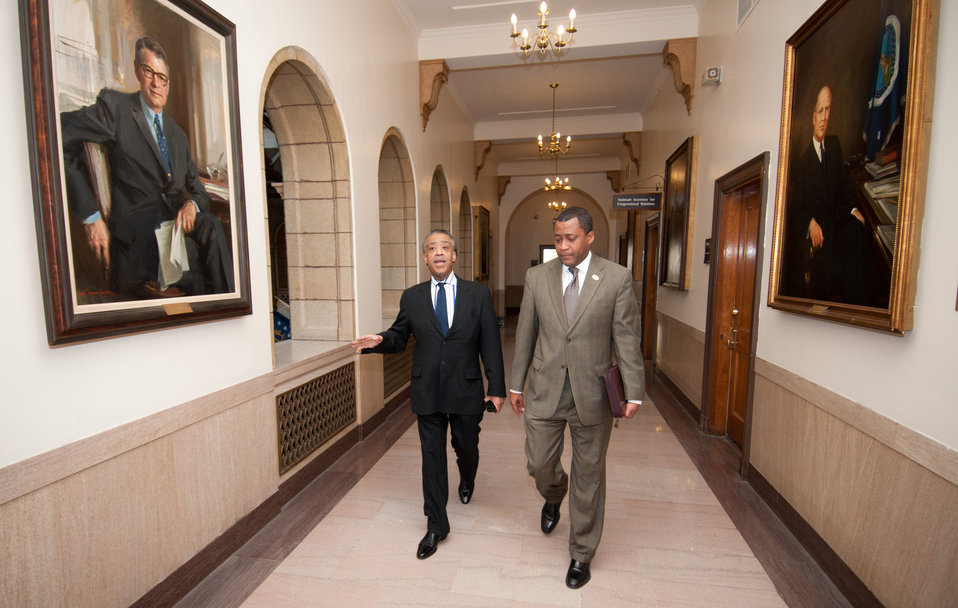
Reverend Al Sharpton, Jr. (left) is escorted through the halls of the Department of Agriculture, by Assistant Secretary for Civil Rights Dr. Joe Leonard on Monday, February 28, 2011; in Washington, D.C. Rev. Sharpton is the keynote speaker at today’s African American History Month Program; his topic is “Civil Rights in the Age of Obama.” On their left and right are portraits of past Secretaries of Agriculture, Orville Lothrop Freeman (in office 1961-1969) and Charles Franklin Brannan (1948-1953).